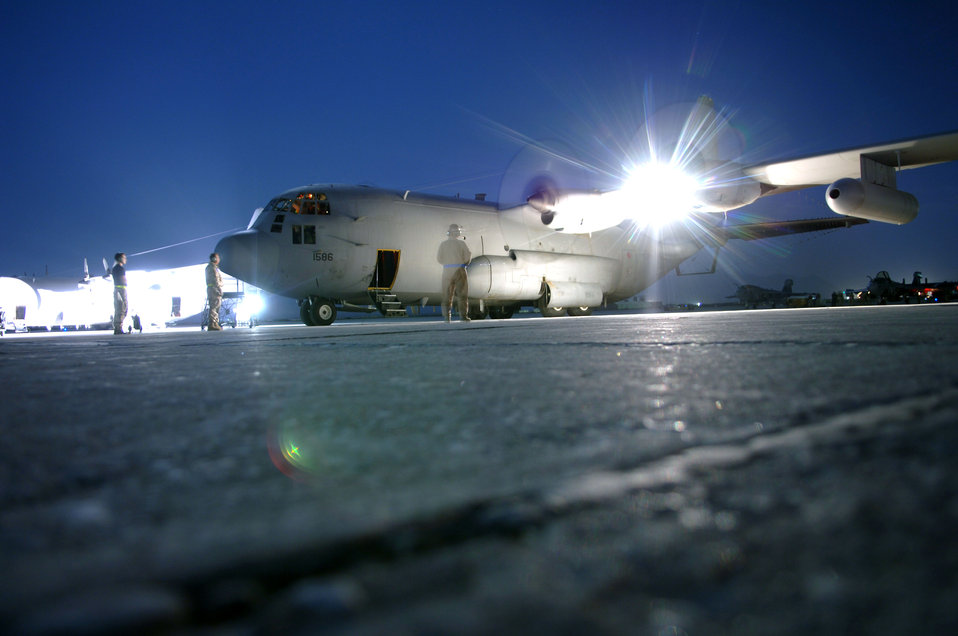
Airpower key to successful voting

BAGRAM AIR BASE, Afghanistan -- An EC-130H Compass Call aircraft with the 41st Expeditionary Electronic Combat Squadron prepares for takeoff in support of Afghanistan's National Assembly elections Sept. 18. The aircraft, along with A-10 Thunderbolt IIs and U.S. Navy EA-6B Prowlers, have stepped up efforts throughout Afghanistan to deter enemy aggression and help ensure voter safety.